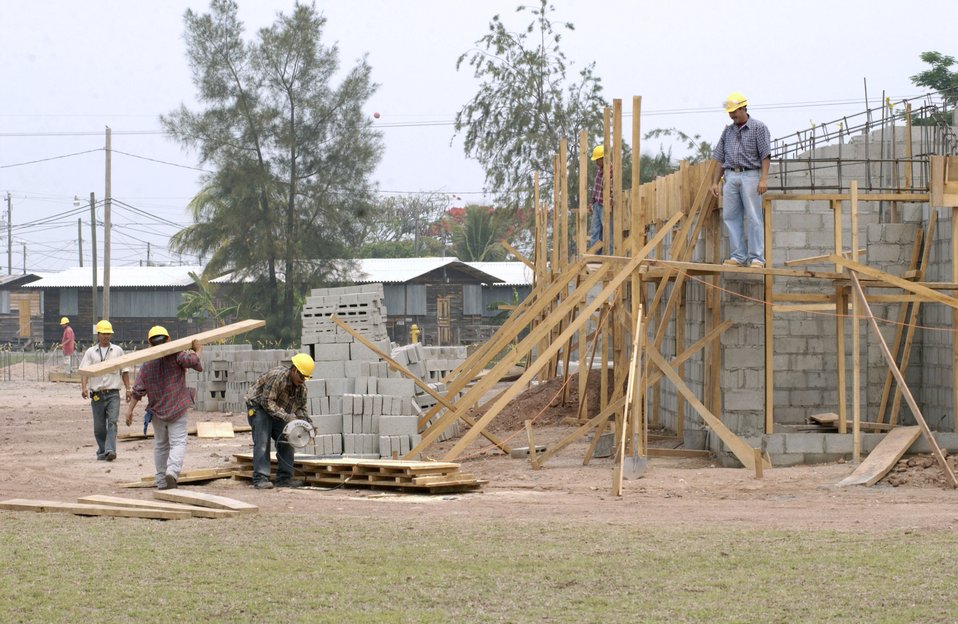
Soto Cano getting permanent makeover

SOTO CANO AIR BASE, Honduras -- New buildings going up here will replace the more than 270 wooden structures called